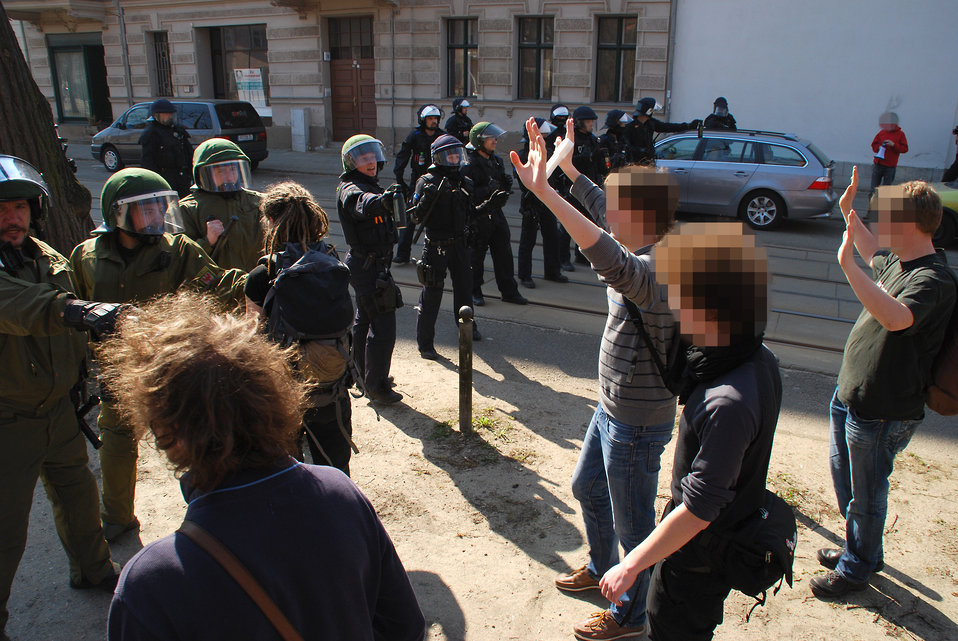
Proteste gegen den Nazi-Aufmarsch am 24.3.2012 in Frankfurt (Oder)